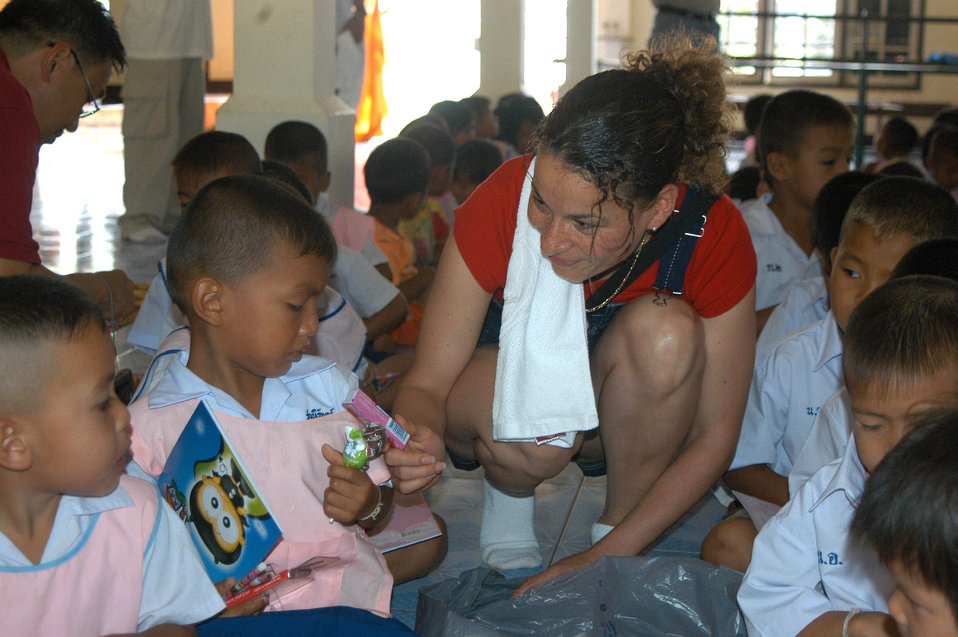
Airmen help rural Thai preschool

UDORN THANI, Thailand -- Tech. Sgt. Louise Arthur hands a child candy at a preschool near here. Airmen from the 353rd Special Operations Group at Kadena Air Base, Japan, visited the preschool to donate supplies and improve the playground.